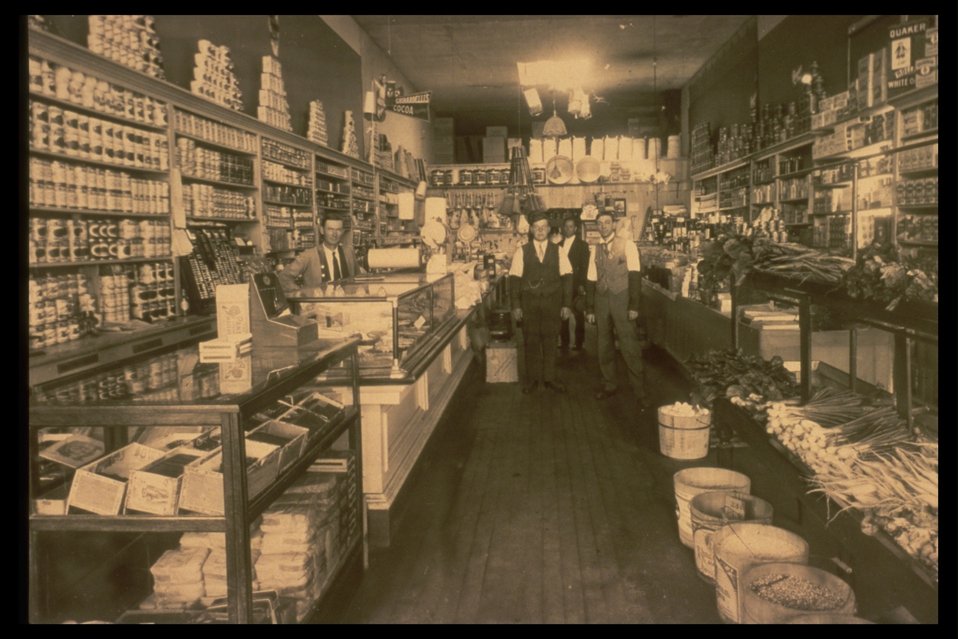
Black and white photo of the inside of an old merchantile with men posing for the picture.